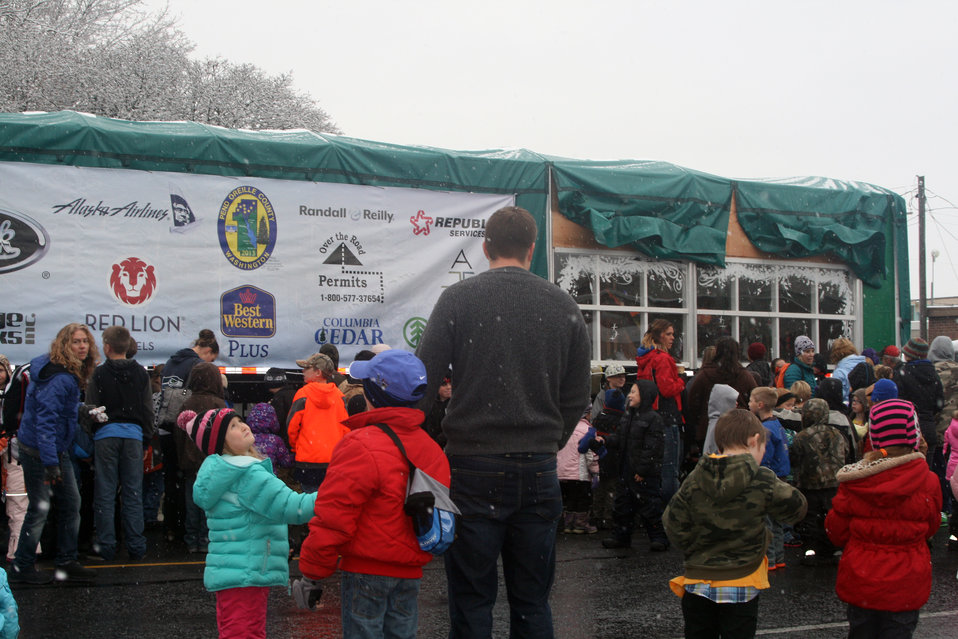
Visitors view the official 2013 Capitol Christmas Tree on Nov. 4, 2013. The Capitol Christmas Tree is an 88-foot tall Engelmann spruce that was harvested at Colville National Forest in Washington on Nov. 1, 2013.